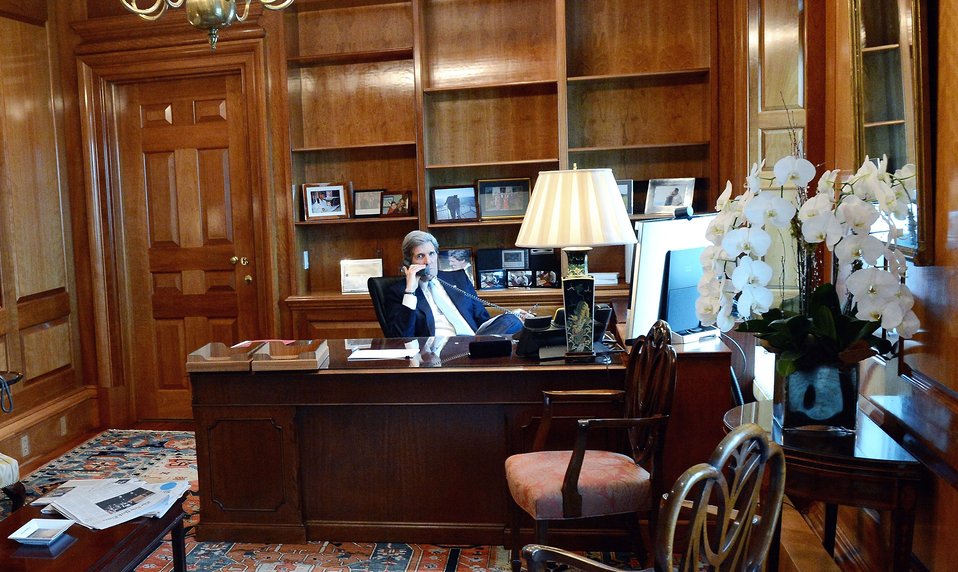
Secretary Kerry Calls UN Secretary-General Ban

U.S. Secretary of State John Kerry speaks by telephone with UN Secretary-General Ban Ki-moon from his Inner Office at the Department of State in Washington, D.C., February 5, 2013.